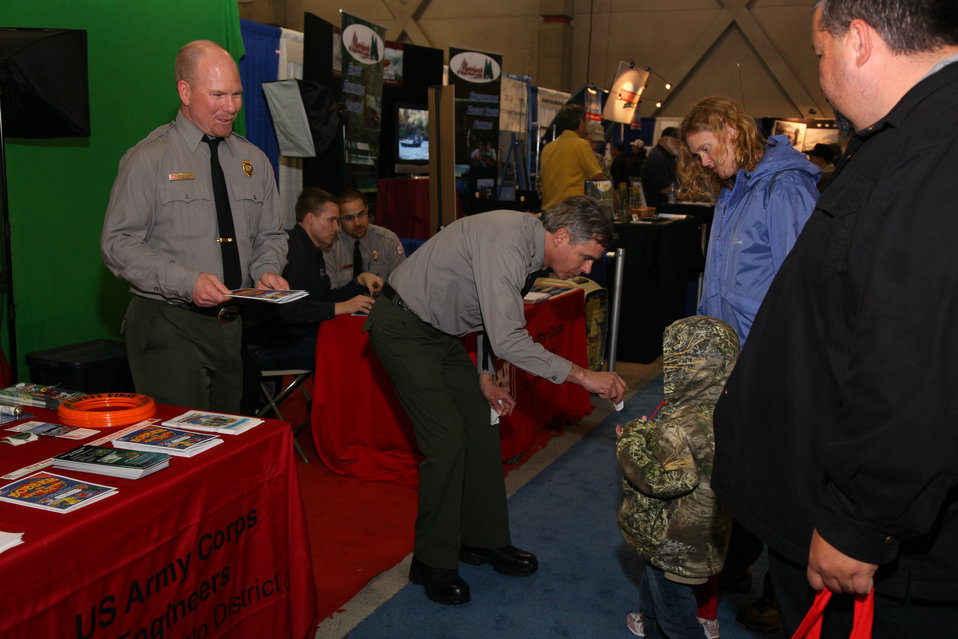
Corps park rangers promote water safety at the 2012 Sportsmen’s Expo

U.S. Army Corps of Engineers park rangers Thomas Downs (left) and Tom Bookholtz (center) talk about water safety with a young visitor to the International Sportsmen’s Exposition in Sacramento, Calif., Jan. 20, 2012. Corps park rangers were on hand at the Cal Expo event to present and promote water safety tips and recreation opportunities at the Corps parks and lakes.